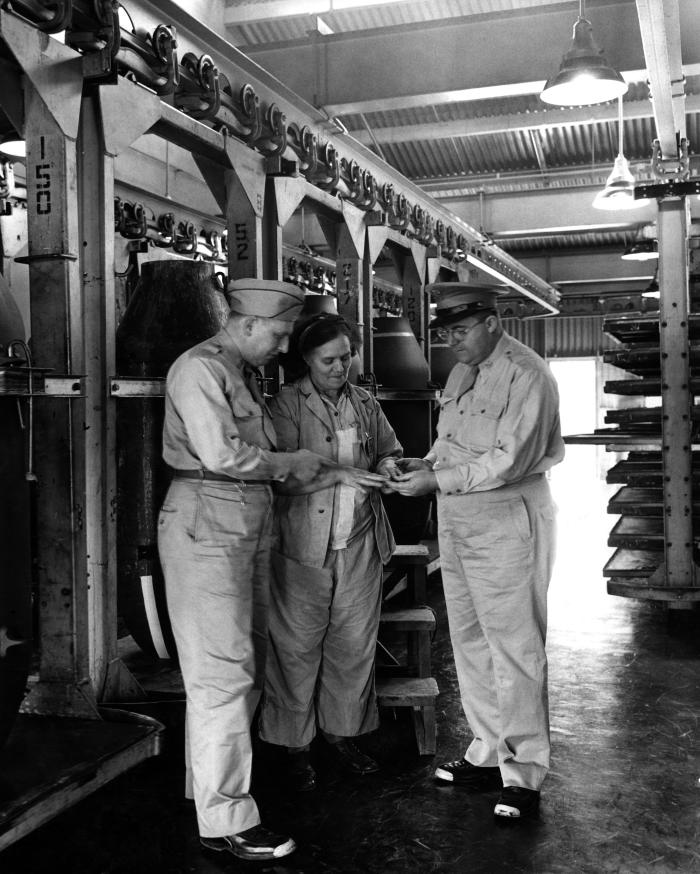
Provided by the Center for Disease Control's (CDC), National Institute for Occupational Safety and Health (NIOSH), this historic 1943 image depicted two Public Health Service (PHS) officers as they were examining the hands of a TNT (trinitrotoluene) industrial plant worker. A poisonous chemical, TNT will irritate the skin upon contact, and actually will change the skin's color to a bright yellow-orange. Prolonged exposure leads to liver damage, anemia, enlargement of the spleen, and a compromised immune system, to name a few of its negative effects. Trinitrotoluene is also a known carcinogen.